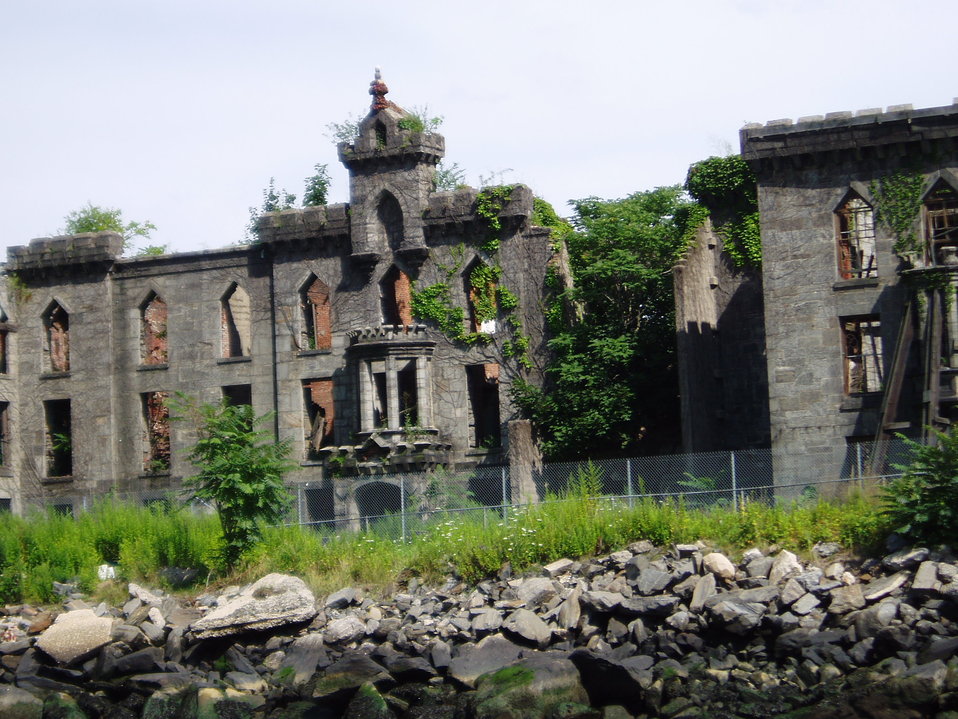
A crumbling wreck of a building somewhere on the New York waterline.